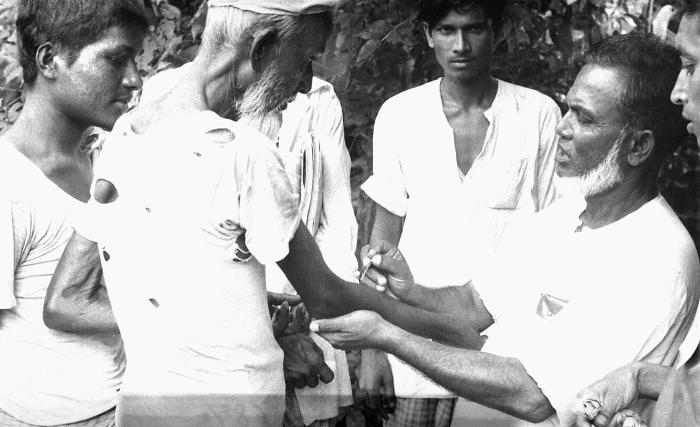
'The saintly' Mr. Rahman, a man from the town of Noakhali, was photographed here while he was demonstrating the method by which a smallpox vaccination was properly administered. Using a bifurcated needle, Mr. Rahman was showing onlookers that the right forearm is a proper vaccination site. The smallpox vaccine helps the body develop immunity to smallpox. The vaccine is made from a virus called vaccinia which is a 'pox'-type virus related to smallpox. The smallpox vaccine contains the 'live' vaccinia virus, not the dead virus, which is the case in many other vaccines. For that reason, the vaccination site must be cared for carefully to prevent the virus from spreading. Also, the vaccine can have side effects. The vaccine does not contain the smallpox virus and cannot give you smallpox.